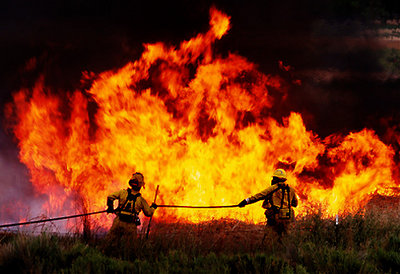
Nevada wildfire

Firefighters battle a 2007 Nevada wildfire fueled in part by invasive cheatgrass.